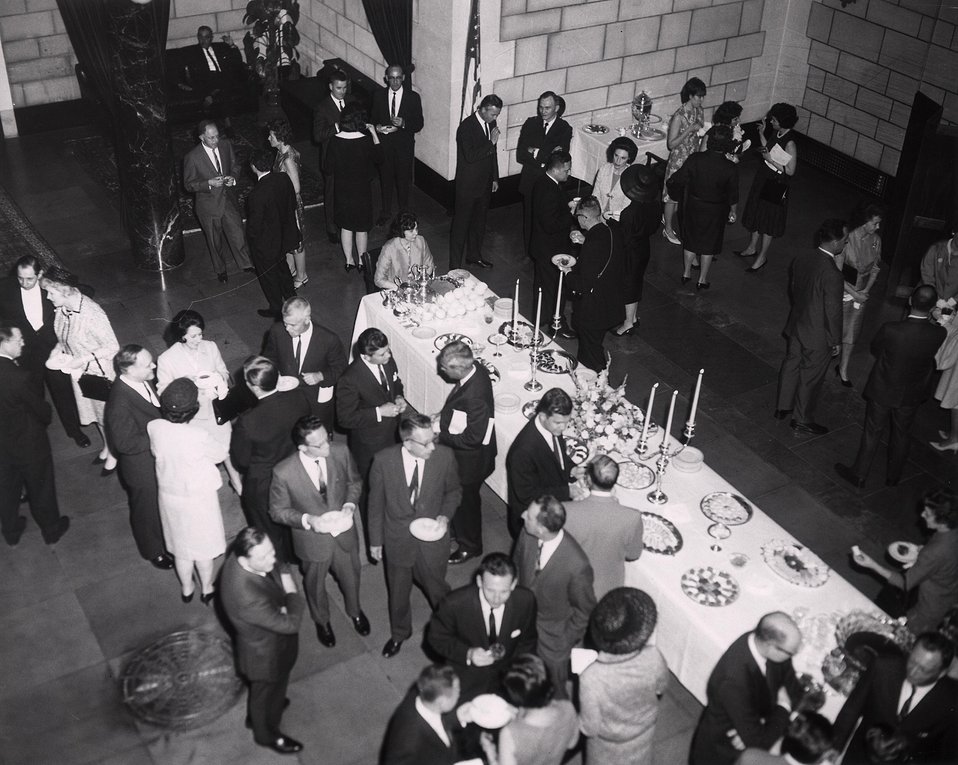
E. O . Lawrence Award Ceremony. National Academy of Sciences. April 29, 1965. Reception in Great Hall.